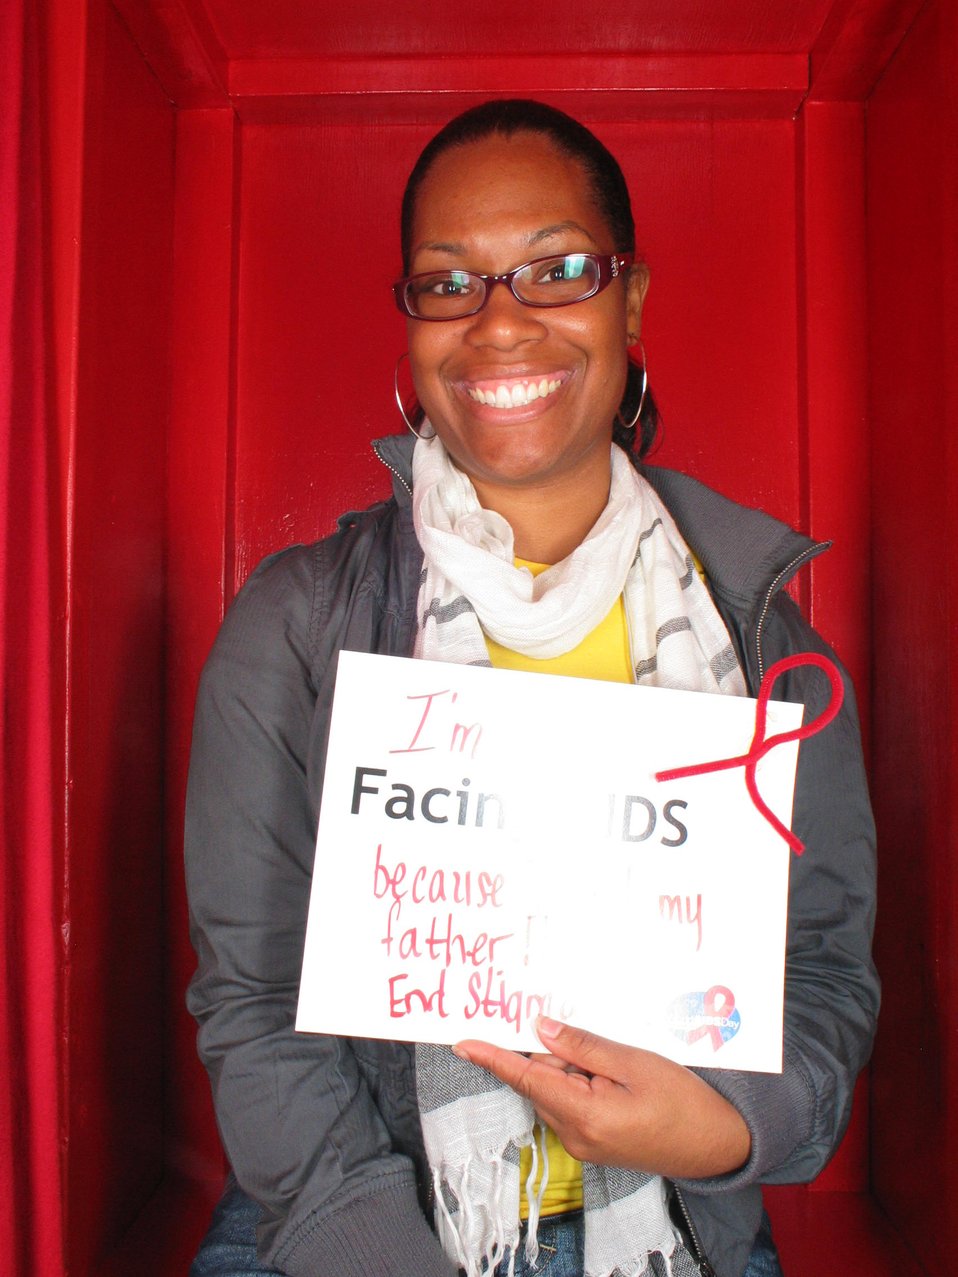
I'm Facing AIDS because I lost my father. End stigma...